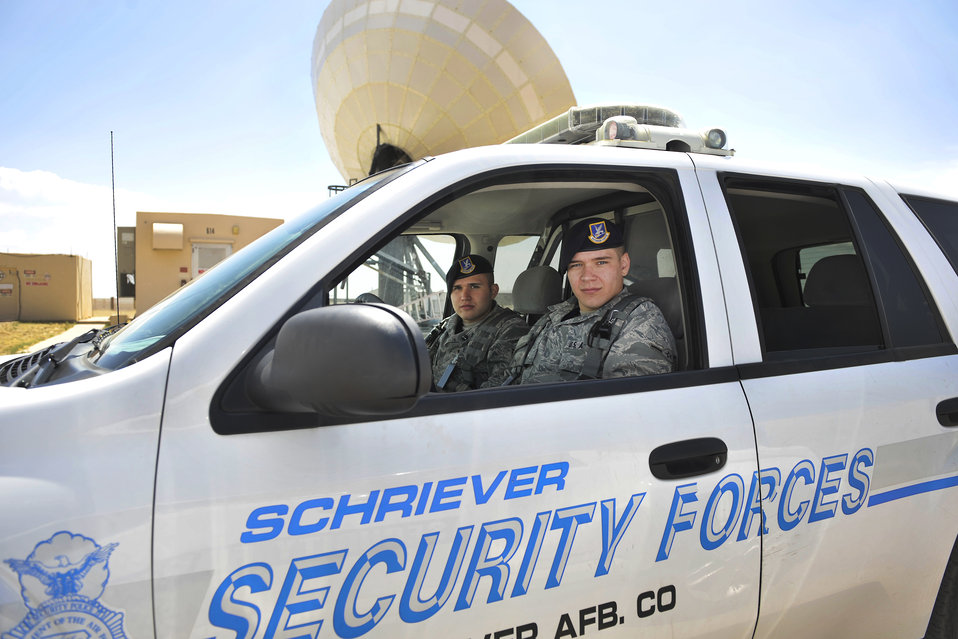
Schriever SFS training

Airmen 1st Class Andrew Beer (driver) and Ryan Bursiaga keep watch over 50th Space Wing assets while on patrol June 15, 2011, at Schriever Air Force Base, Colo. Airmen Beer and Bursiaga are 50th Security Forces Squadron Security specialists.